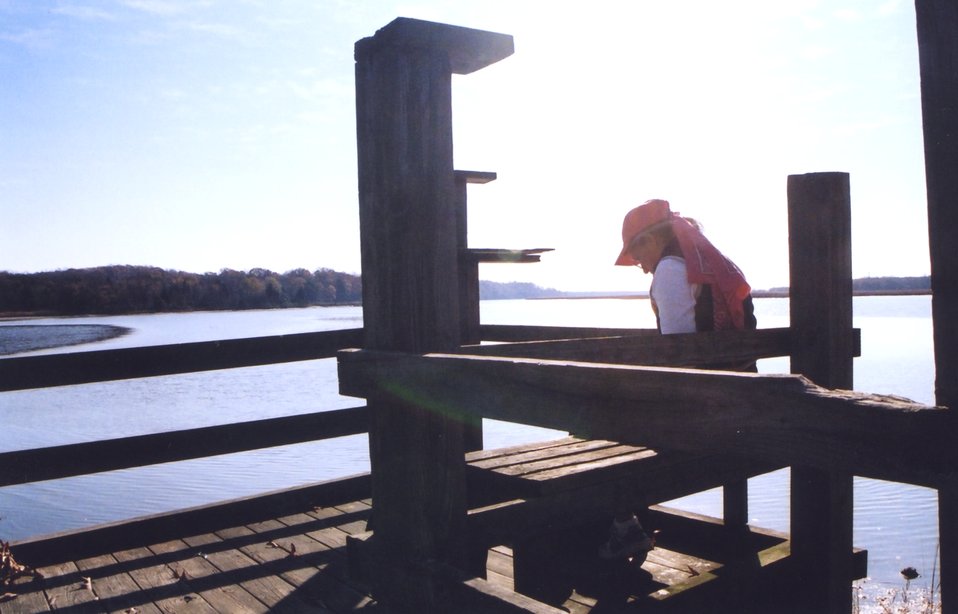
Catching a quiet moment on a warm fall afternoon at a public park fishing pier.